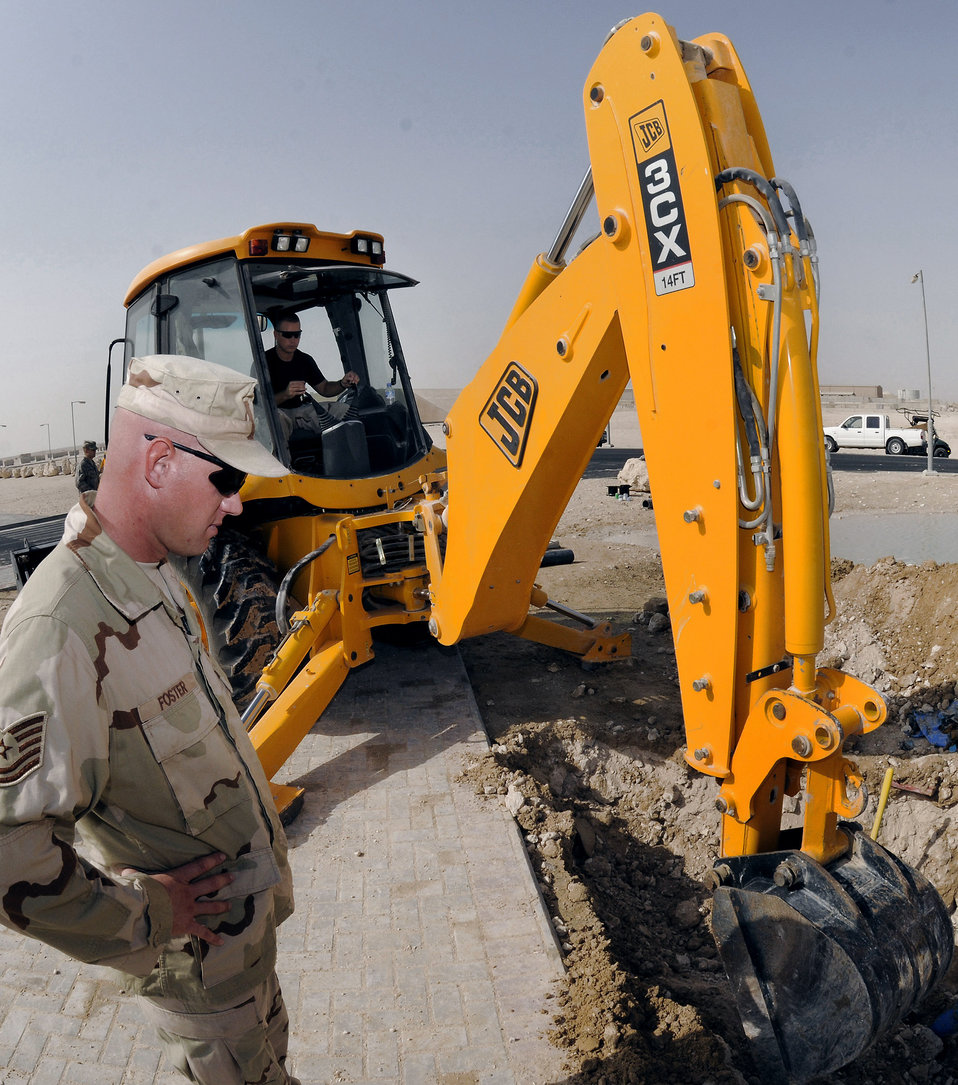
Emergency repairs

Tech. Sgt. Jason Foster provides an extra set of eyes for Staff Sgt. David Bengate, who operates the backhoe, clearing dirt from a broken section of water main Sept. 15 at a Southwest Asia air base. The broken pipe caused a loss of water for the entire Blatchford-Preston Complex here. Sergeant Foster hails from Perrysburg, Ohio and is deployed from Scott Air Force Base, Ill. Sergeant Bengate, a native of Cadillac, Mich., is deployed from McConnell AFB, Kan. Both are assigned to the 379th Expeditionary Civil Engineer Squadron.